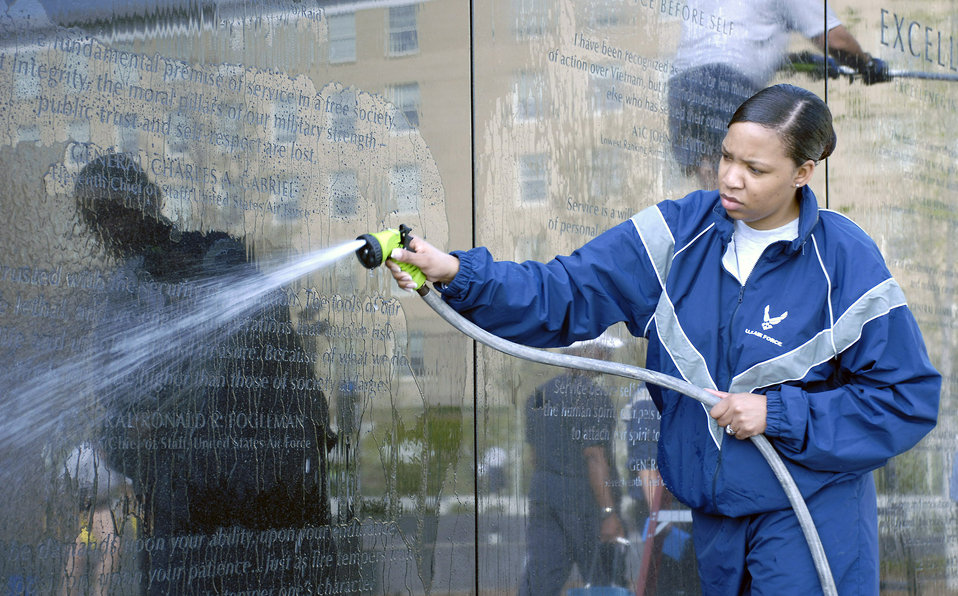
Sprucing up the Air Force Memorial

Staff Sgt. Shannah Holmes hoses down the granite wall during a work party April 19 at the Air Force Memorial. More than 50 volunteers from Air Force Sergeants Association Chapter 300 in Washington D.C. gathered to help spruce up the site. Dedicated on Oct., 14, 2006, the memorial honors the service and sacrifice of the men and women of the United States Air Force and its predecessor organizations. The wall bears the inscriptions of combat campaigns and expeditionary operations and contains the words of Air Force leaders that relate to the service's core values of Integrity First, Service Before Self and Excellence in All We Do. The memorial is located just outside the nation's capital in Arlington, Va., adjacent to Arlington National Cemetery and overlooking the Pentagon. Sergeant Holmes works in the Pentagon in the Secretary of the Air Force Financial Management and Comptroller's Office.